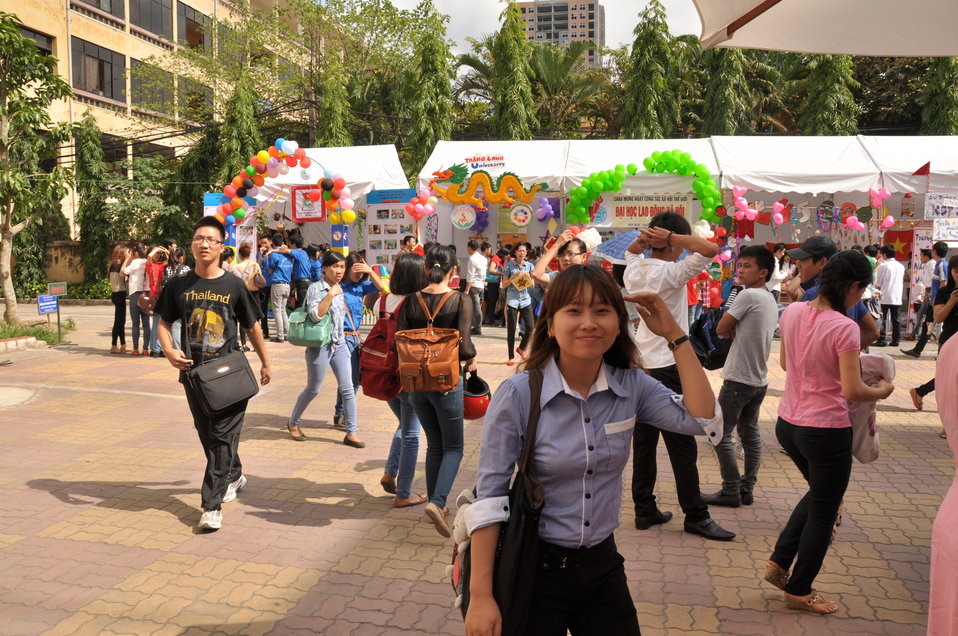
USAID Supports Social Work Education

Photo: @USAIDVietnam, November 9, 2012